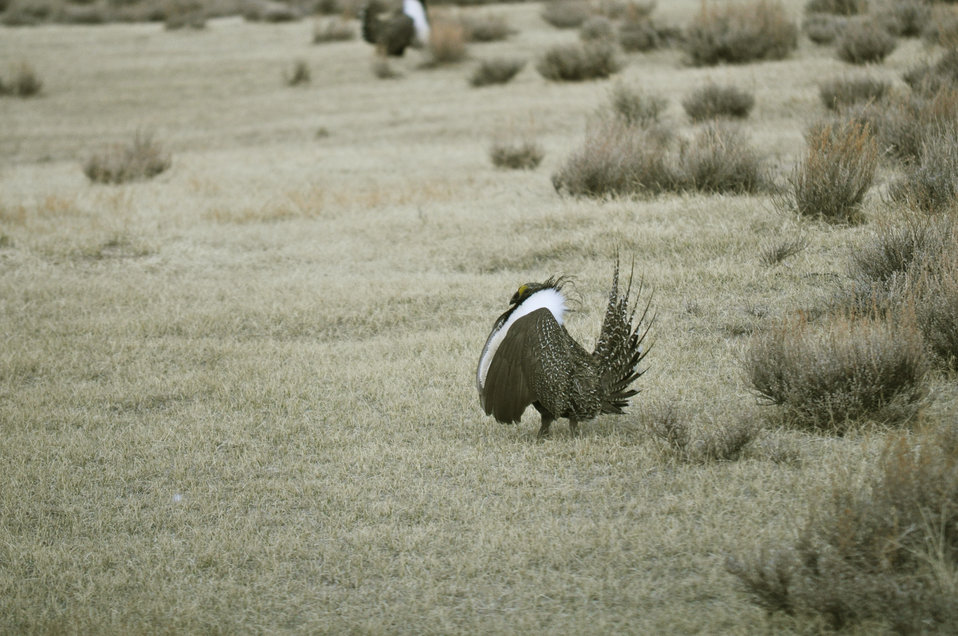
Male greater sage-grouse strut at lek (dancing or mating grounds) to attract females near Bodie, California.